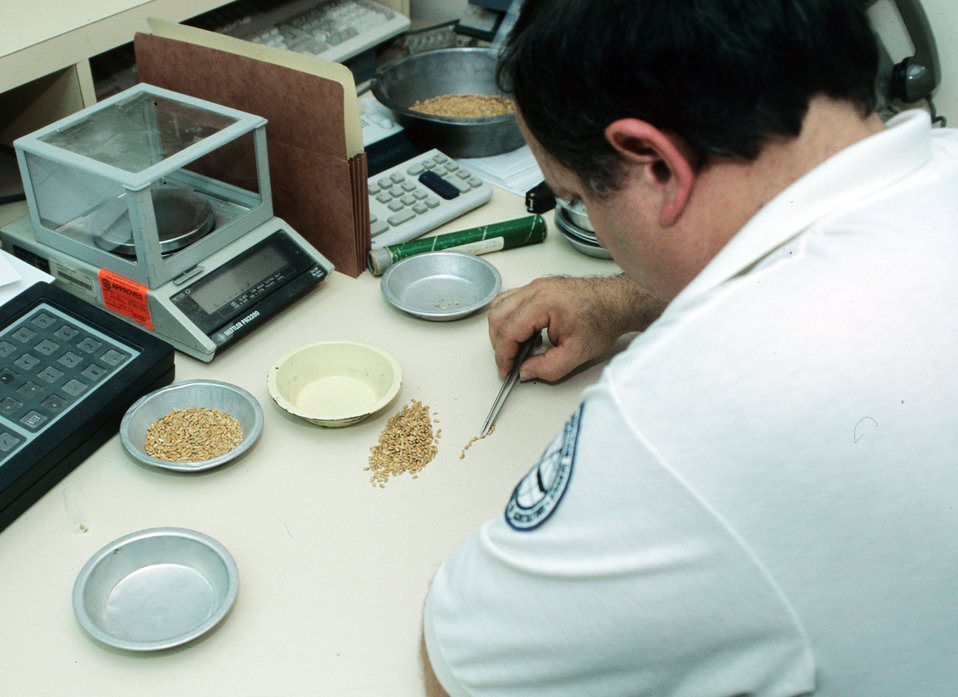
A U.S. Department of Agriculture (USDA) Grain Inspection, Packers and Stockyards Administration (GIPSA) Federal Grain Inspection and Weighing Services (FGIS) agent inspects a sample of Soft Red Winter Wheat at Riceland Foods Incorporated in Joensboro, AR on Sept. 1, 1996. USDA GIPSA offers inspection services for rice upon request on a fee basis for both domestic and export shipments. Rice inspection services are divided into two basic types: inspection for grade or factor analysis without grade. Inspection for grade involves analyzing the sample according to the quality factors listed in the Official U.S. Standards for Rice and certifying the applicable numeric grade designation, the quality factors responsible for the grade assignment, and any other quality factors the customer requests. Factor analysis involves the analysis of quality factors requested by the applicant for service without the certification of an applicable numeric grade designation. Factors requested by applicants might include free fatty acid, total oil and free fatty acid, stain as a count, broken in brown rice, false smut, and aflatoxin. Official inspections result in the issuance of an official certificate, which reports the grade of the rice. U.S. and international buyers rely on official USDA inspection certificates to provide accurate, official descriptions of the grade, class, and condition of the inspected rice. Official certificates are receivable by all offices and all courts of the United States as prima facie evidence of the truth of the statements stated thereon.